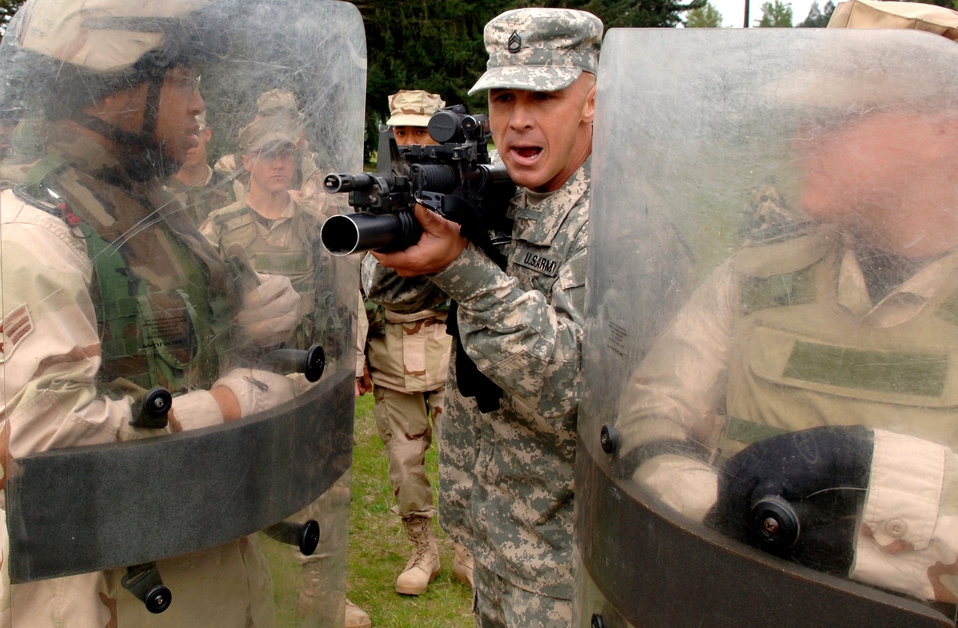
Detainee training operations teach survival skills

Army Sgt. 1st Class Troy Brown describes to Airmen undergoing detainee training operations on April 25, 2006, at Fort Lewis, Wash., the proper technique for firing from behind riot shields. This training prepares Airmen by replicating situations they may encounter while deployed.